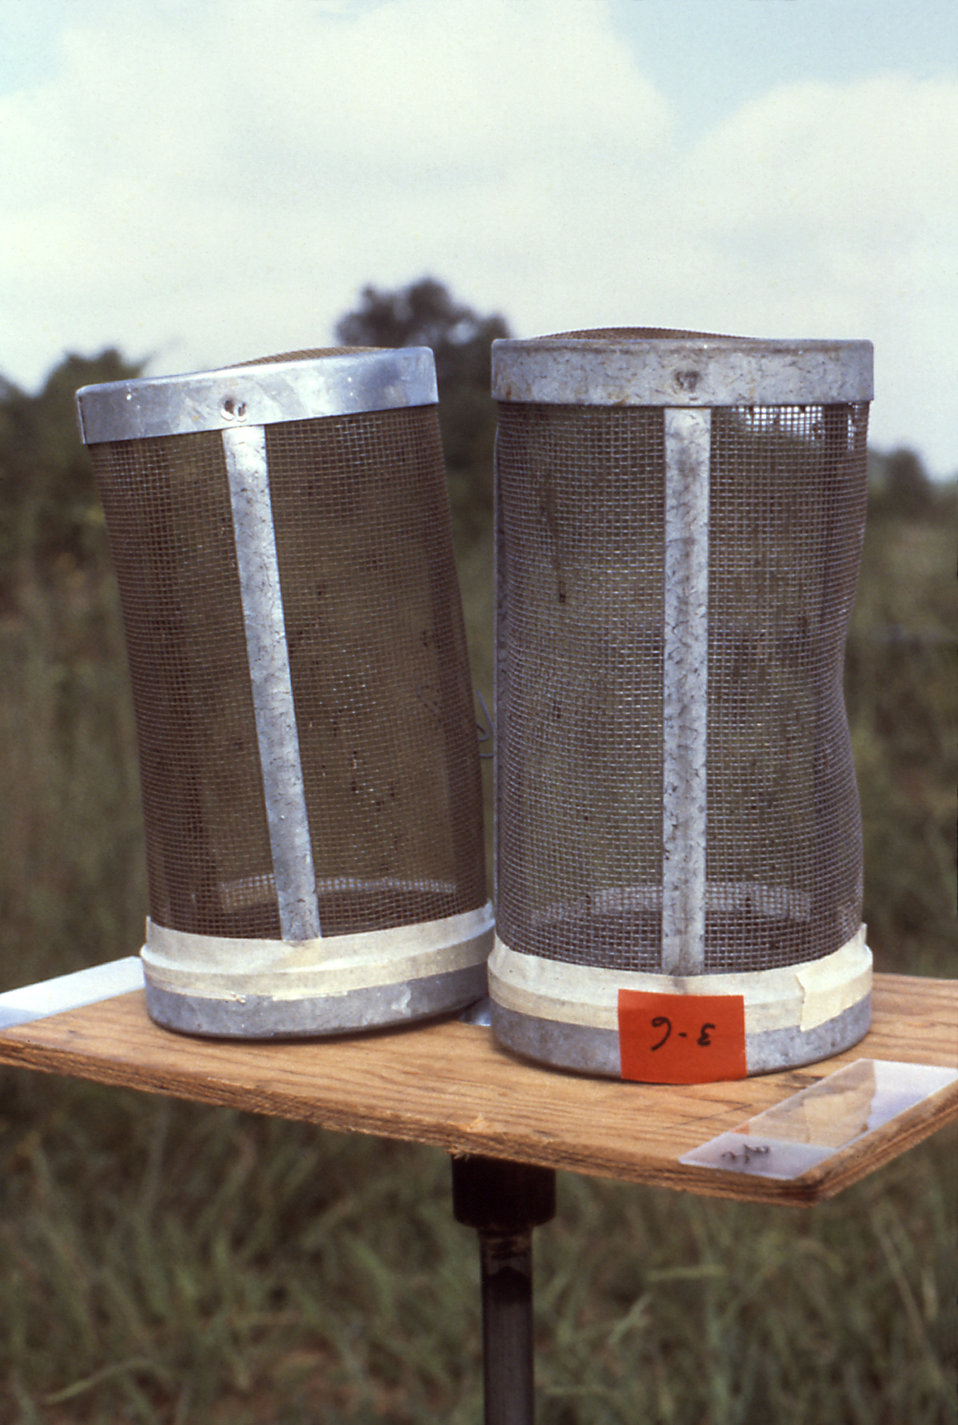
This 1978 photograph depicted two 3' x 6' standard bioassay cages that had been used in field tests in which endemic mosquitoes were collected to be counted, and analyzed by further testing.